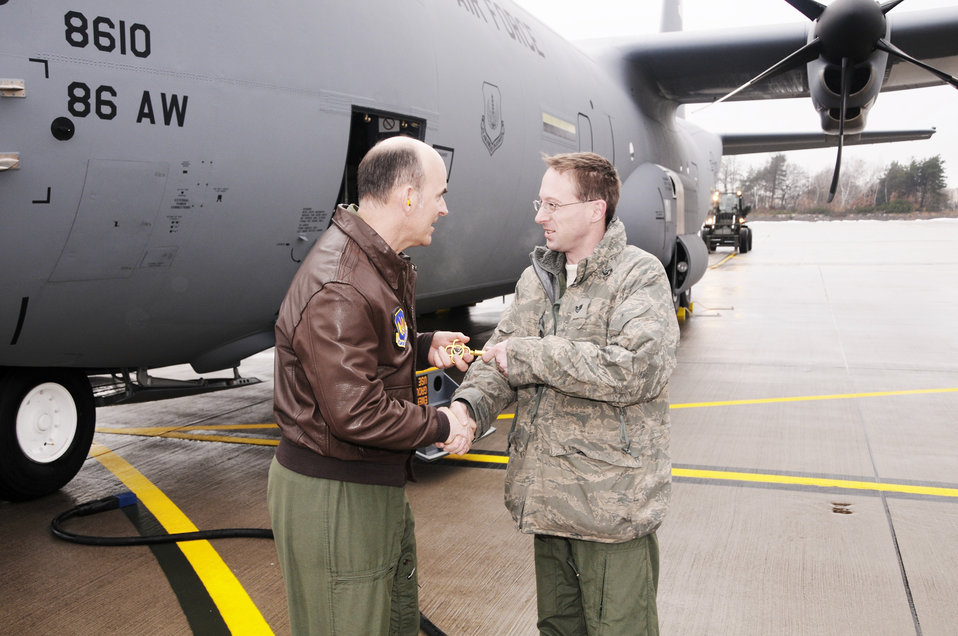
U.S. Air Forces Africa support

Brig. Gen. Michael Callan hands the ceremonial key to a new C-130J Super Hercules aircraft to Staff Sgt. Jason Keithley after landing the aircraft Dec. 23, 2009, at Ramstein Air Base, Germany. The J-model, one of two aircraft delivered to the 37th Airlift Squadron on the day, gives the unit a total of 10 J-models received. General Callan is the 17th Air Force Vice Commander. Sergeant Keithley is a 86th Aircraft Maintenance Squadron crew chief.